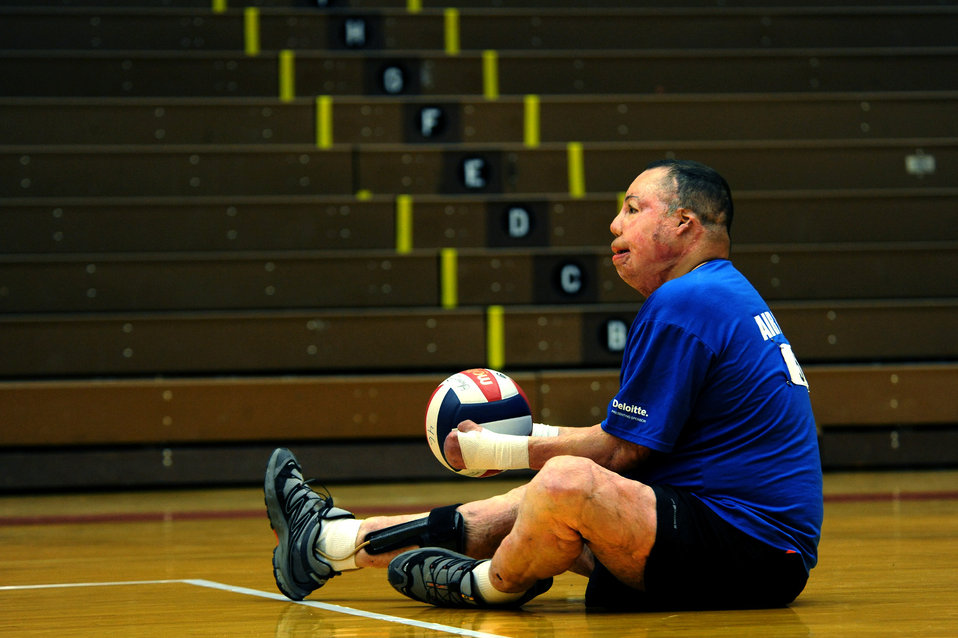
Warrior Games Volleyball

Air Force Warrior Games athlete, Tech. Sgt. Israel Del Toro, prepares to serve the ball during the Warrior Games sitting volleyball match against Army at the U.S. Olympic Training Center in Colorado Springs, Colo., May 13, 2010.